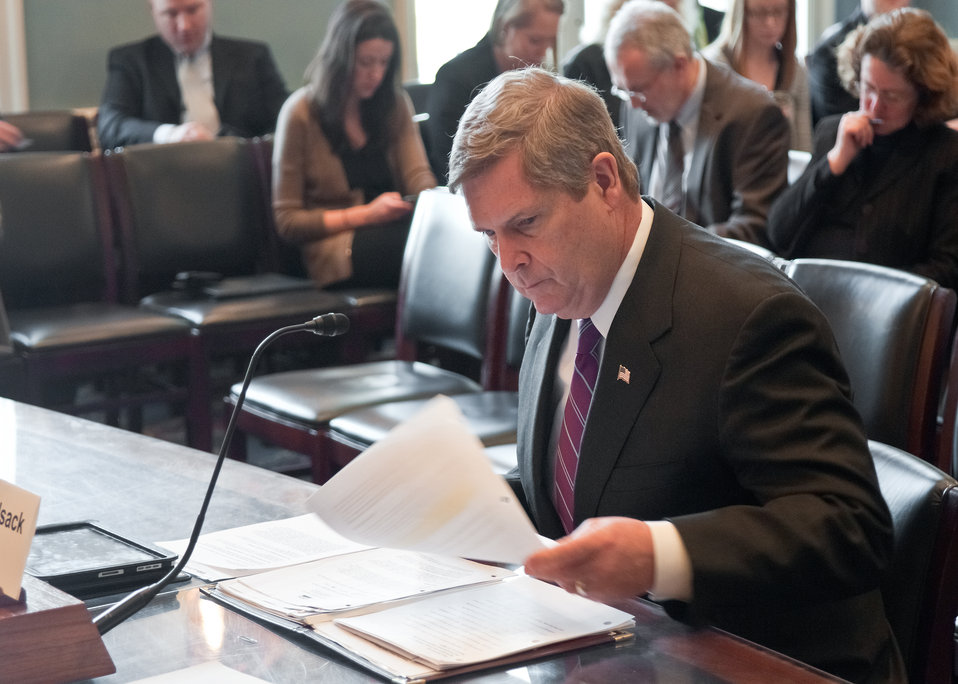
Agriculture Secretary Tom Vilsack prepares his statement prior to testifying on the “State of the Ag Economy” at a House Agriculture Committee Hearing in the Longworth House Office Building in Washington, D.C., Thursday, February 17, 2011. Secretary Vilsack described the prospects and recent developments in output and input markets and the challenges and opportunities they present for U.S. Agriculture.